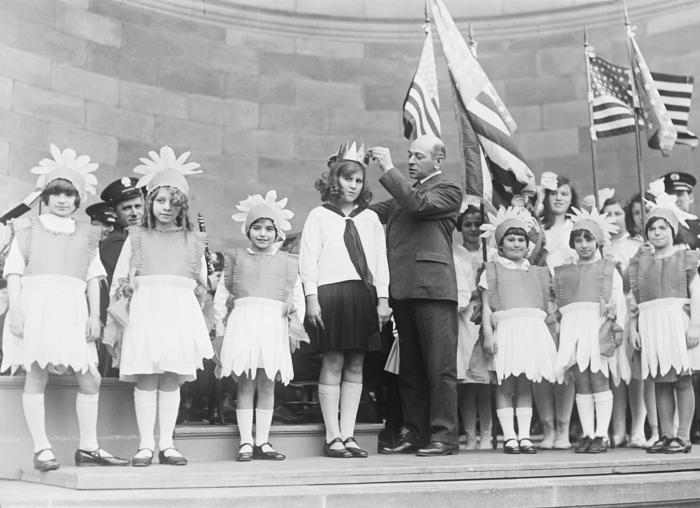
This historic photograph depicted an gathering of school children assembled on a stage during a presentation marking the observance of 'Child Health Day'. The girl in the center is being crowned 'Queen'. This particular event took place in the state of New York. The original image was scanned from a glass lantern slide donated by the Minnesota Department of Health, and is one of a historical collection of documents and photographs devoted to observances of Child Health Day in the United States.